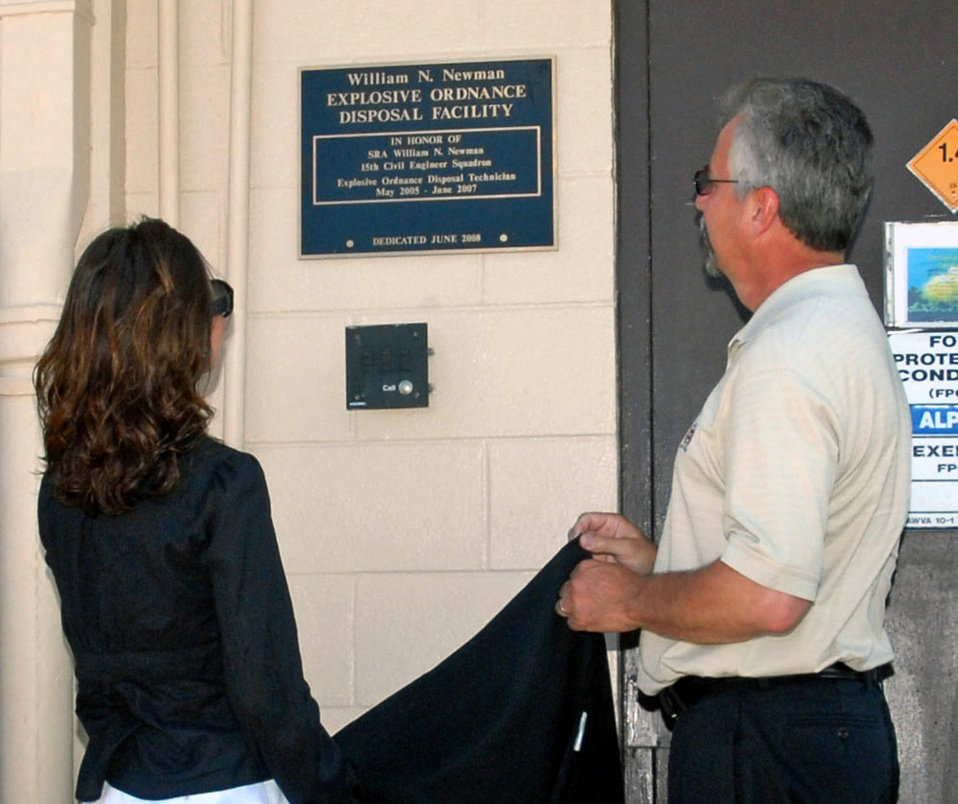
EOD facility at Hickam named in honor of fallen Airman

Senior Airman William Newman's wife, Soyong, and his father, Matt Newman, unveil a plaque at the 15th Civil Engineer Squadron Explosive Ordnance facility June 7 at Hickam Air Force Base, Hawaii. Airman Newman was assigned to a three-man team clearing improvised explosives devices when he lost his life June 7, 2007.